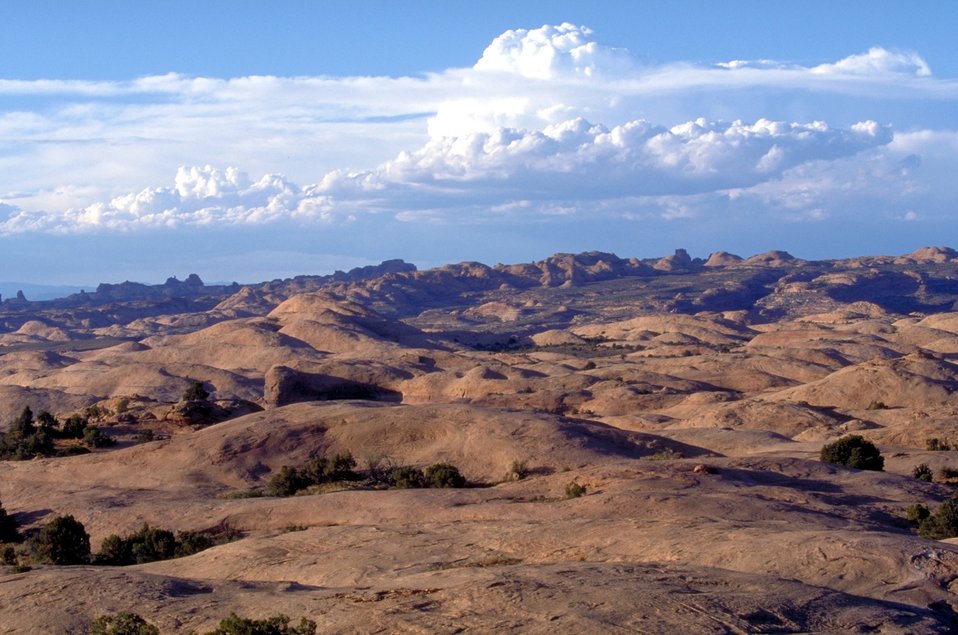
Moab Slickrock Bike Trail near Moab, Utah.